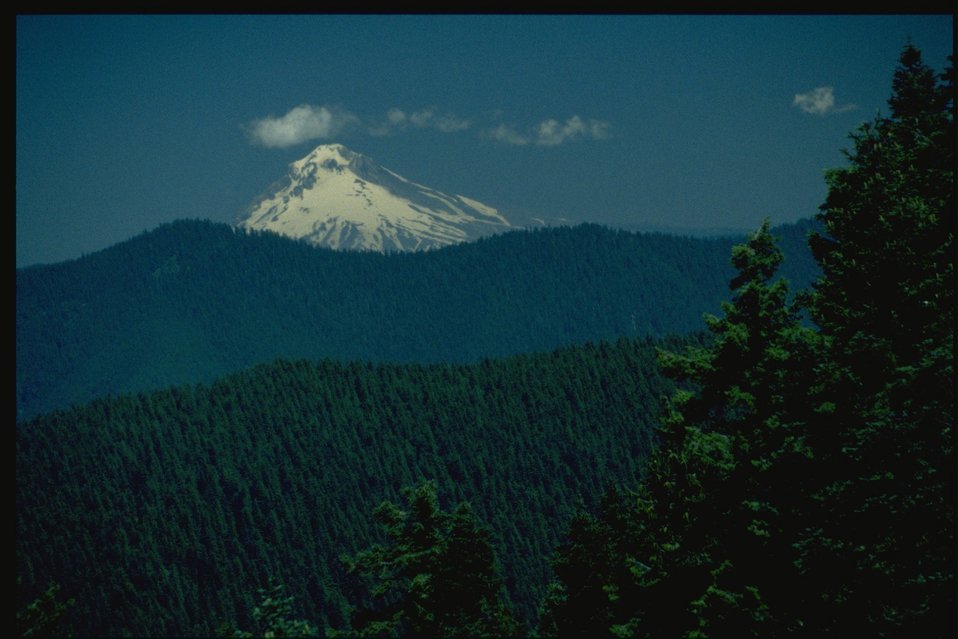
Scenic view from Mt. Horeb, Mt. Hood in the distance.